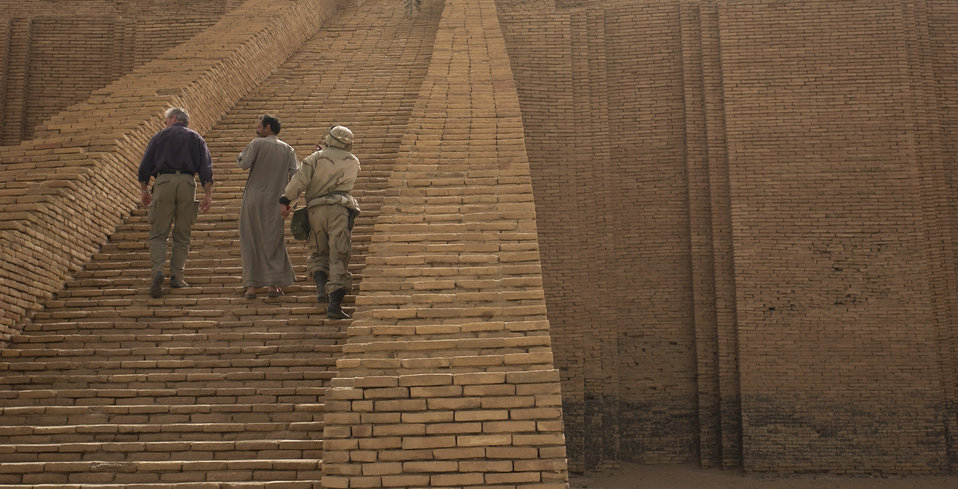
Temple stairs

OPERATION IRAQI FREEDOM -- Dhief Muhsen, son of the curator of the Ur Temple in Iraq, leads a member of the 402nd Civil Affairs Battalion and a reporter from CBS' 60 Minutes II up the temple steps. The temple site is 6,000 years old. The 402nd Civil Affairs Battalion works as a liaison between the military, relief agencies and dislocated civilians.